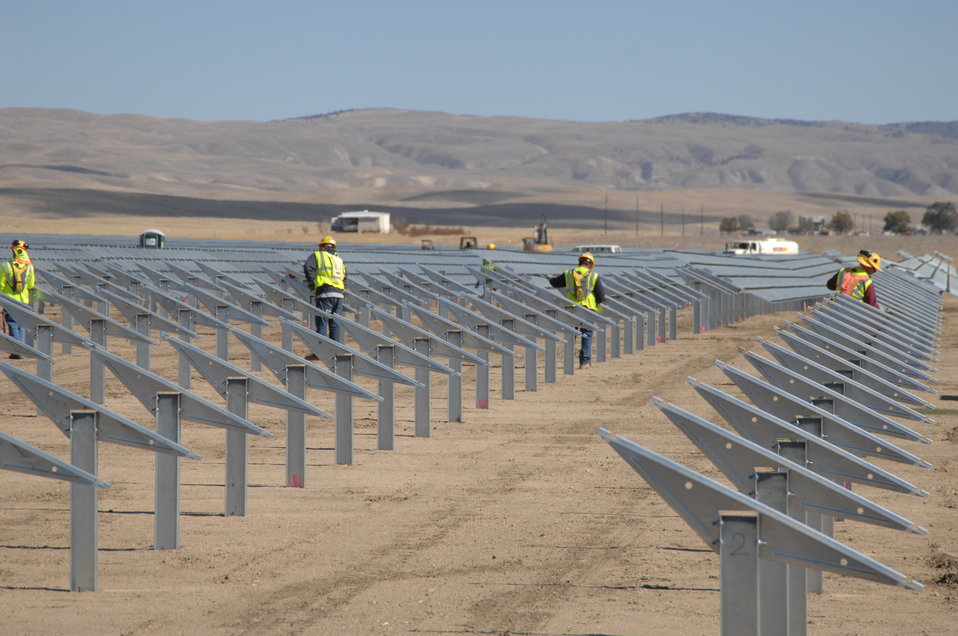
Work at Topaz Solar 3